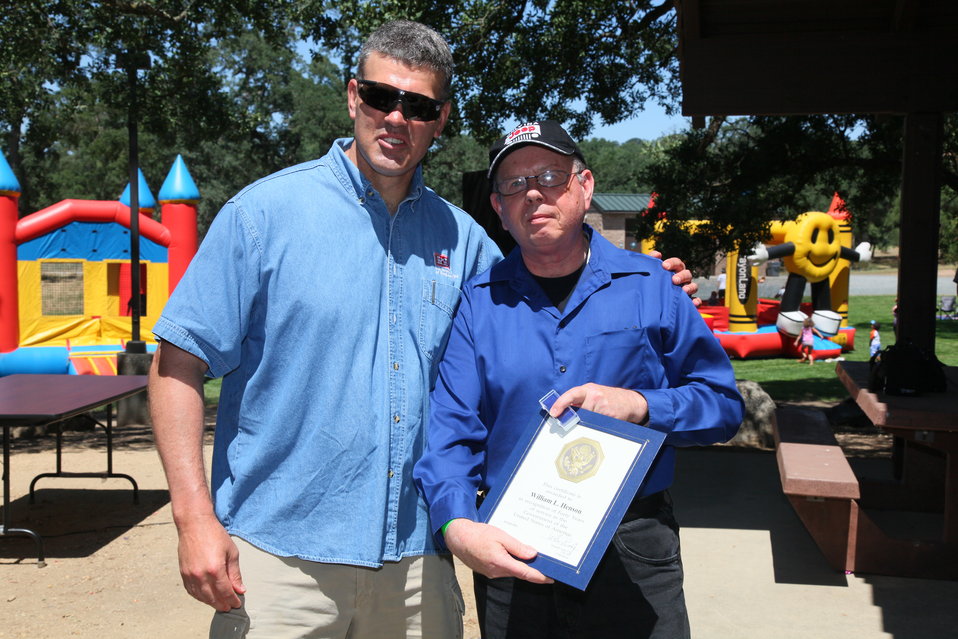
2011 Annual Picnic